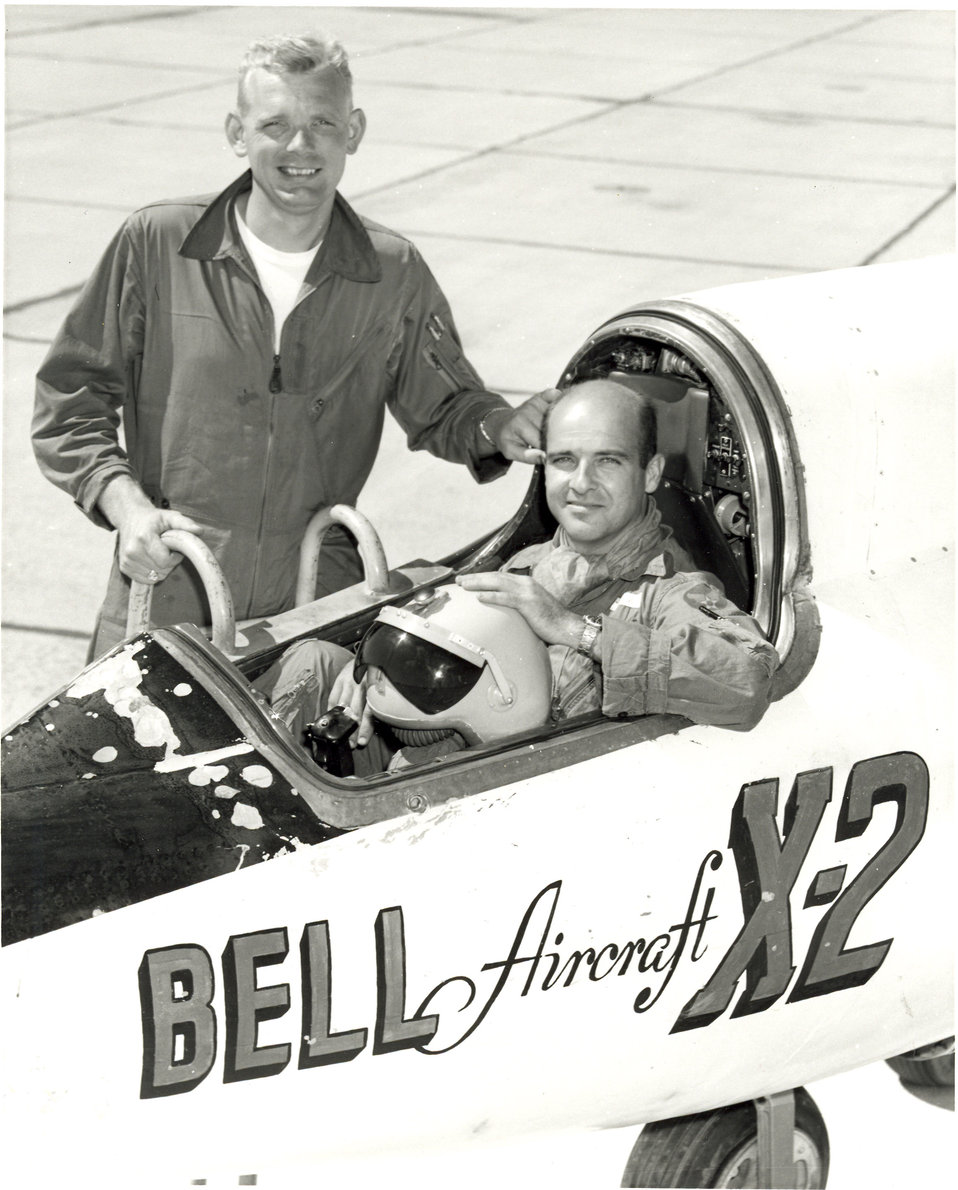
X-2 pilots, Capts. Iven Kinchloe and Mel Apt

Capts. Iven C. Kinchloe (left) and Mel Apt pose with the Bell X-2 rocket-powered aircraft. Captain Kinchloe climbed to 126,200 feet altitude in the X-2 Sept. 7, 1956. Captain Apt reached a speed of Mach 3.2 -- three times the speed of sound -- in the aircraft before it tumbled out of control and he was killed attempting to bail out on Sept. 27, 1956.